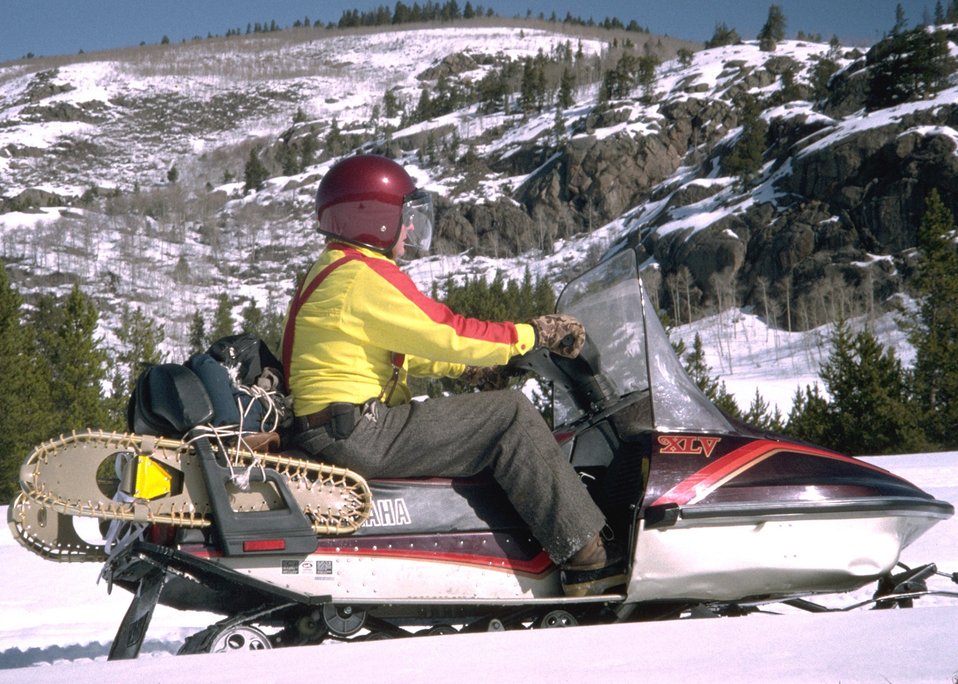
Snowmobiling on a mountain site.